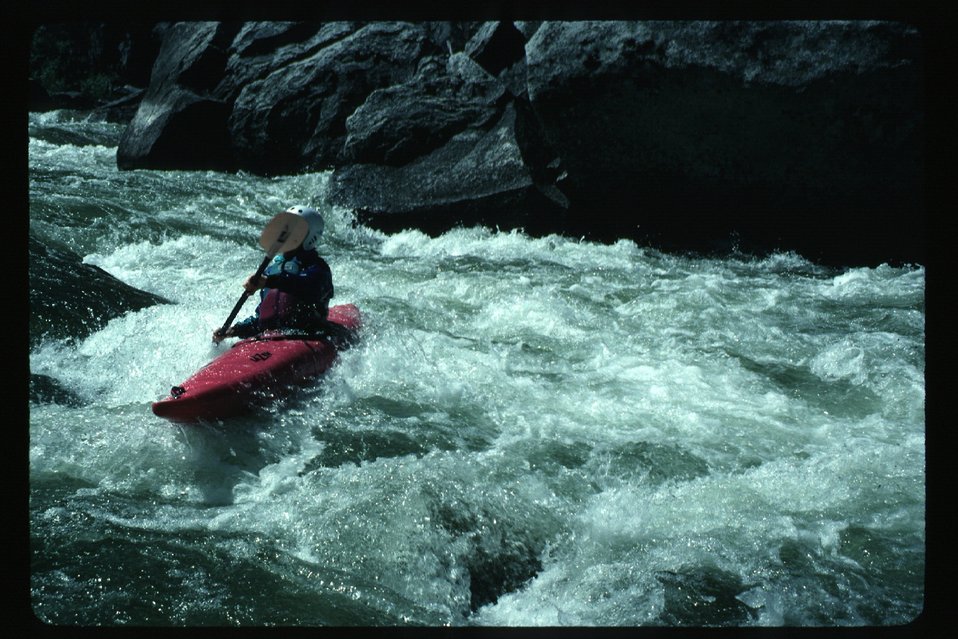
Kayaker in white water Kayaking Four Rivers Field Office LSRD Lower Snake River District